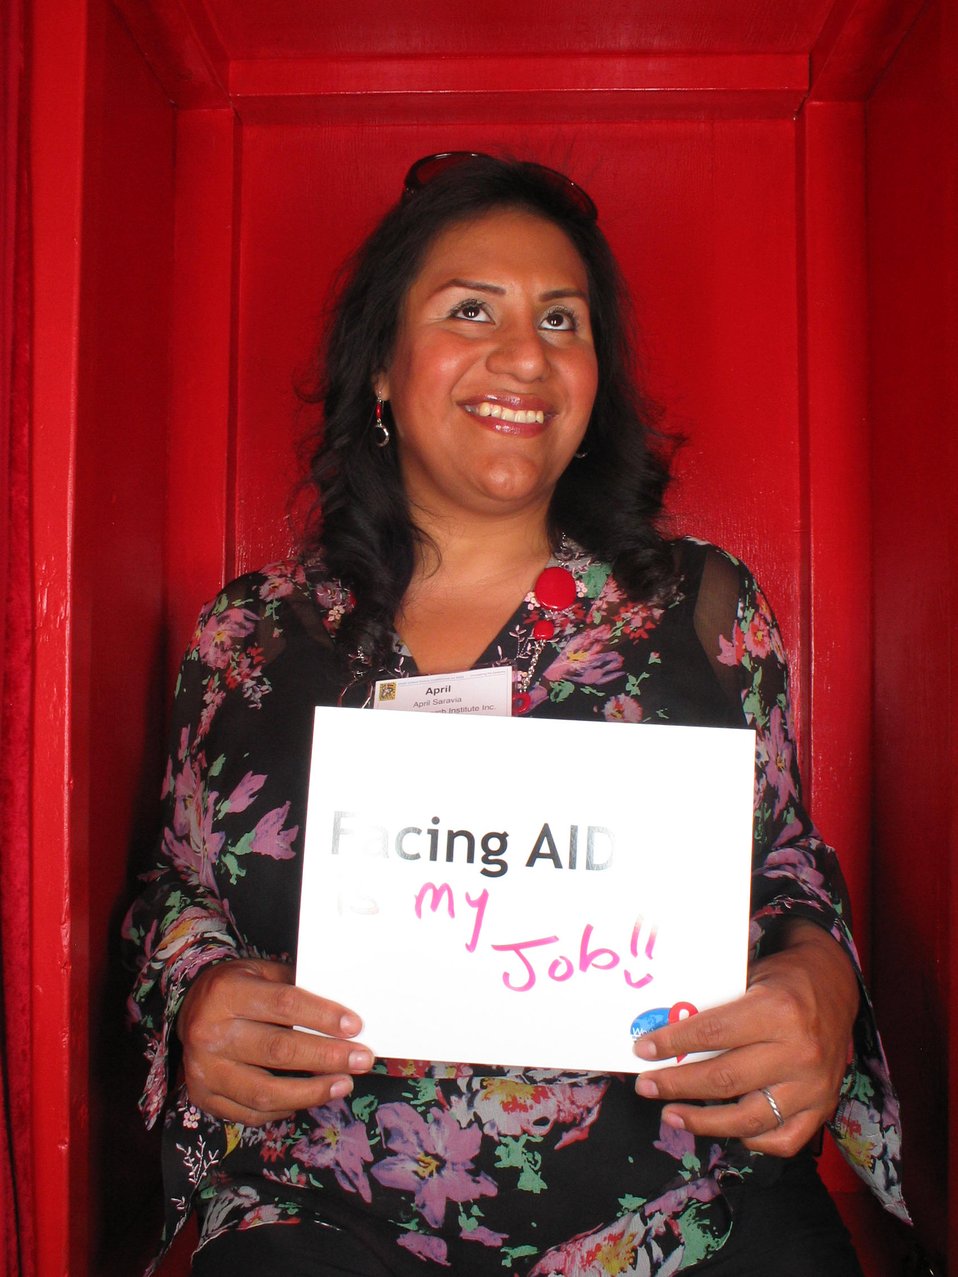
Facing AIDS is my job!!!